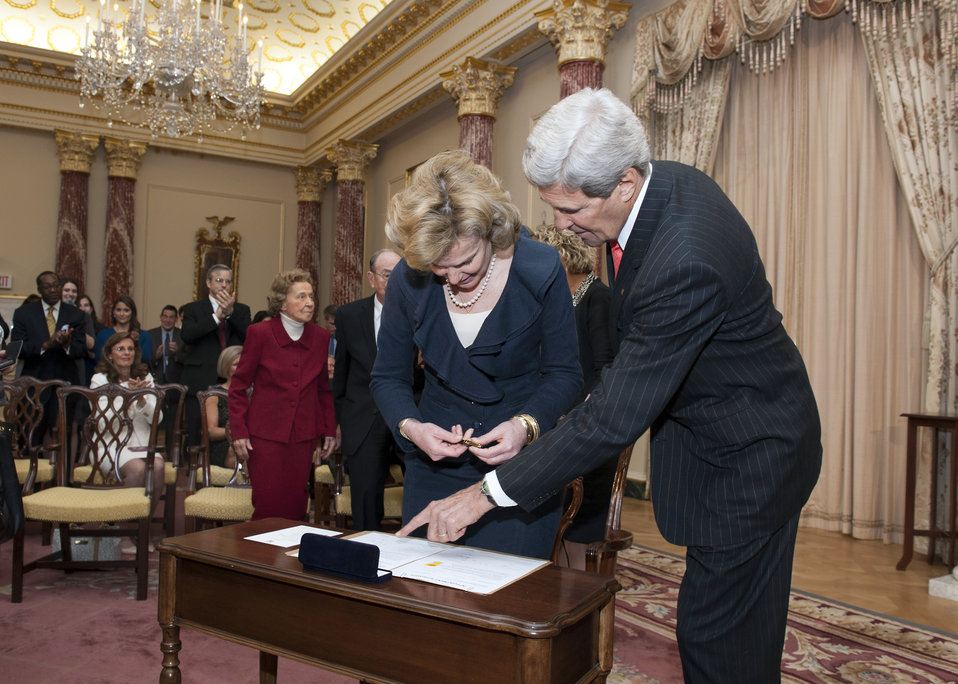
Ambassador Birx Prepares to Sign Her Appointment Papers

U.S. Secretary of State John Kerry shows Ambassador-at-Large and Coordinator of the United States Government Activities to Combat HIV/AIDS Deborah Birx where to sign her appointment papers during her swearing-in ceremony at the U.S. Department of State in Washington, D.C., on April 25, 2014.